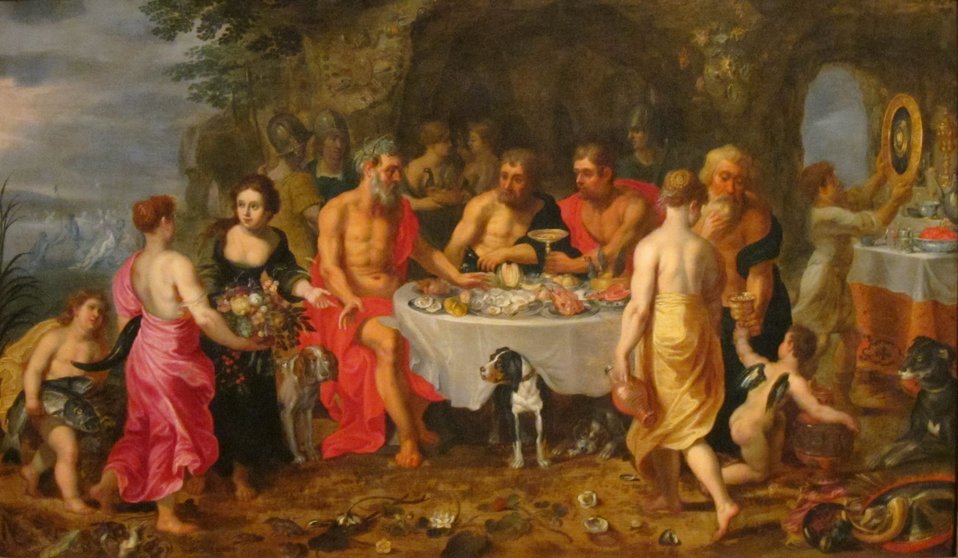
'The Feast of Achelous' by Jan Brueghel the younger and Hendrick van Balen